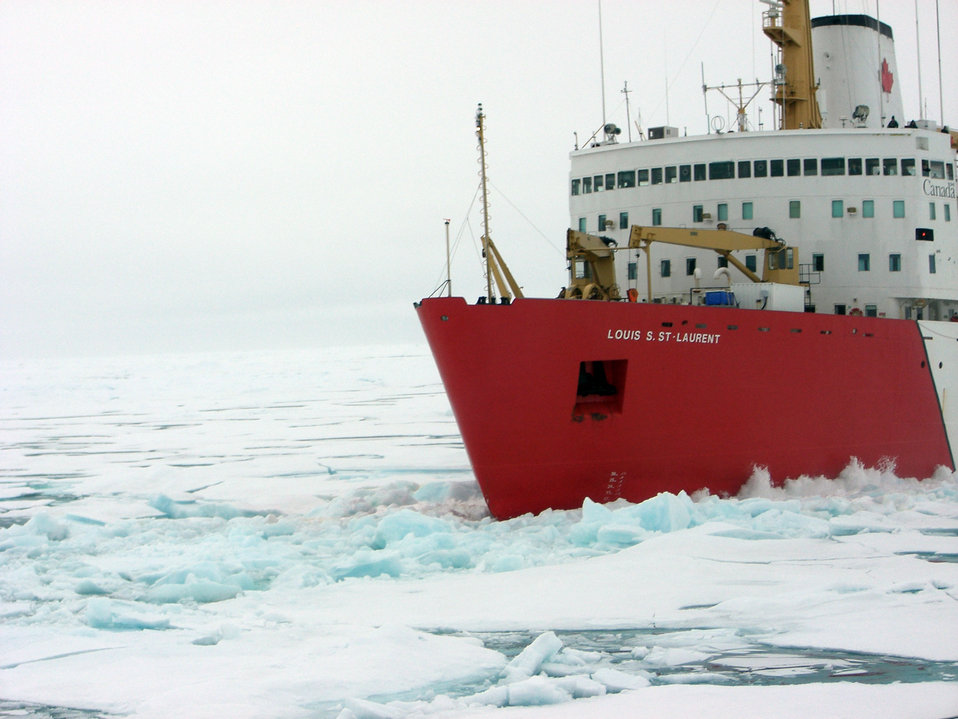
U.S.-Canada Fourth Joint Mission To Map the Continental Shelf in the Arctic Ocean

Views of the U.S.-Canada fourth joint mission to map the continental shelf in the Arctic Ocean in August and September 2011. The 2011 joint mission employed the flagship icebreaker from each country, the U.S. Coast Guard Cutter Healy and the Canadian Coast Guard Ship Louis S. St-Laurent (LSSL), with each ship performing different functions and one ship breaking ice for the other.